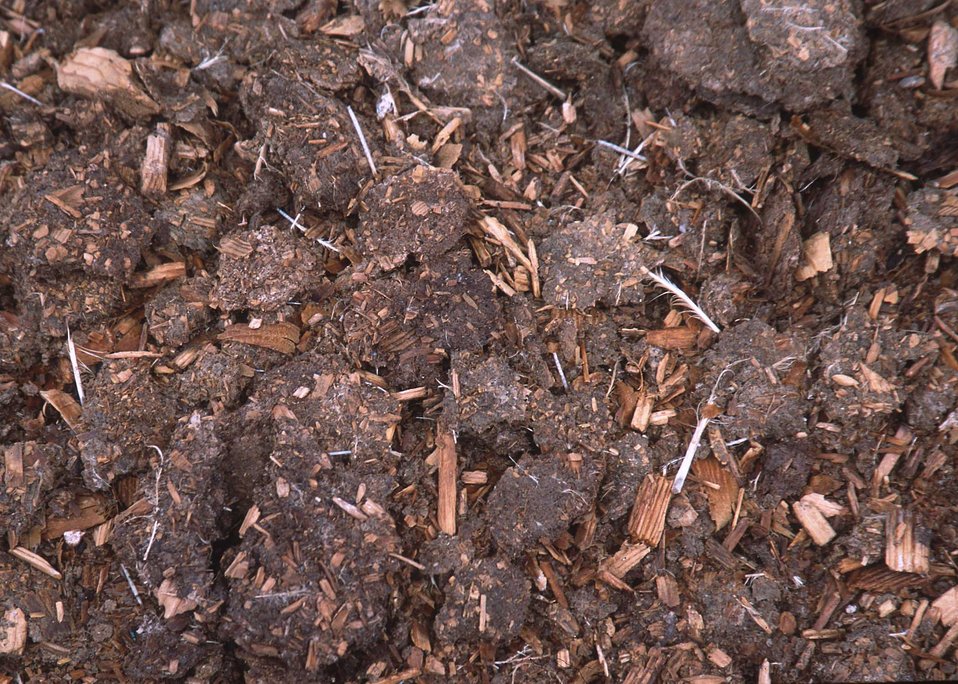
Compost containing turkey manure and wood chips from bedding material is dried and then applied to pastures for fertilizer. Benton, Arkansas.